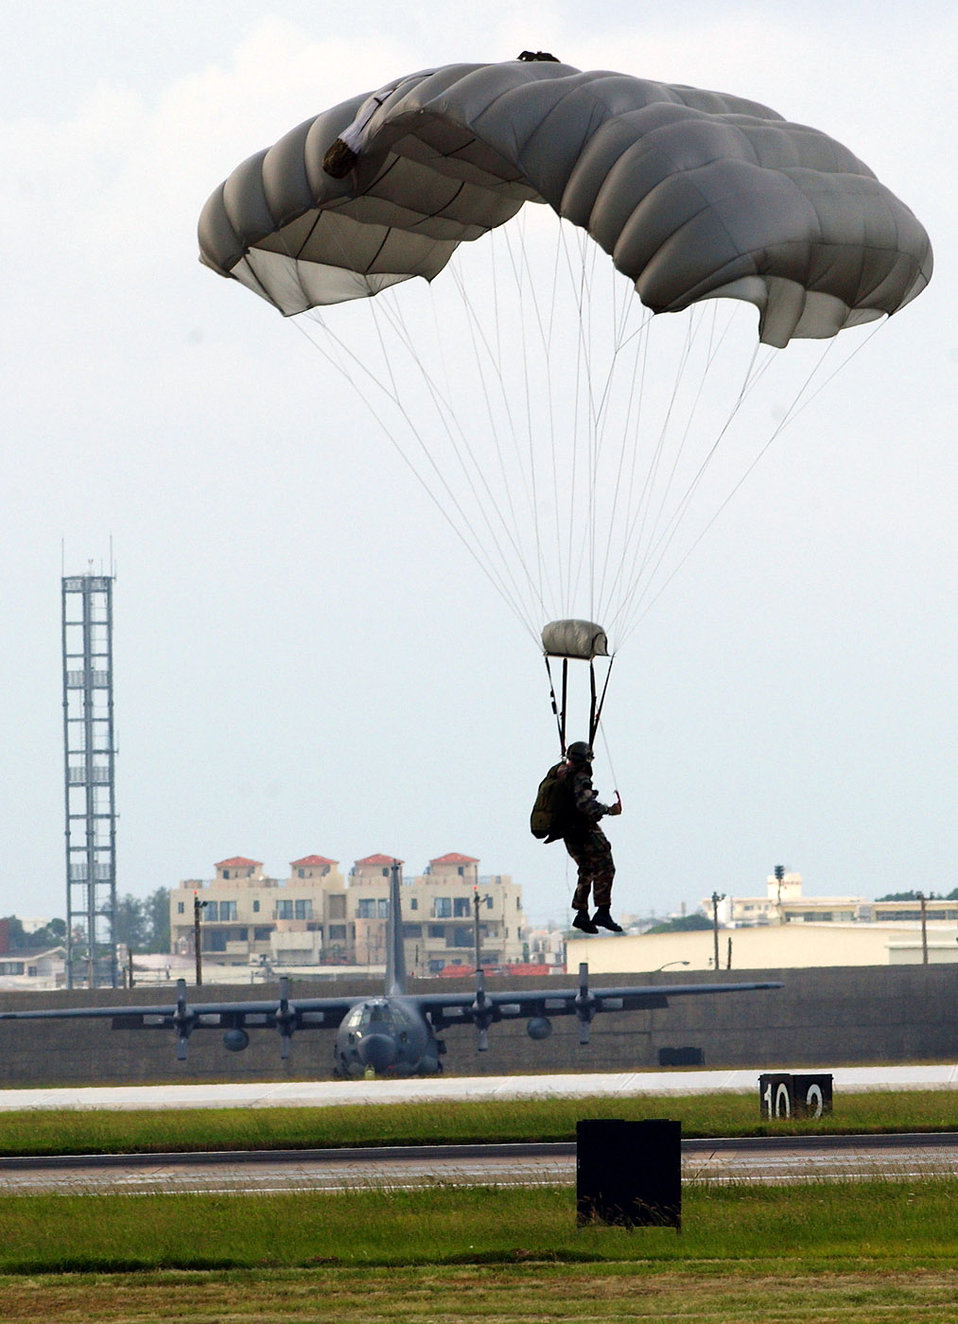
Proficiency paradrop

A pararescueman conducts a parachute drop Oct. 19 on Kadena Air Base, Japan. The Airmen train to maintain proficiency for the defense of Japan and to meet U.S. obligations. The pararescuemen are capable of conducting search-and-rescue missions under most conditions and have saved the lives of both U.S. military and Okinawans.